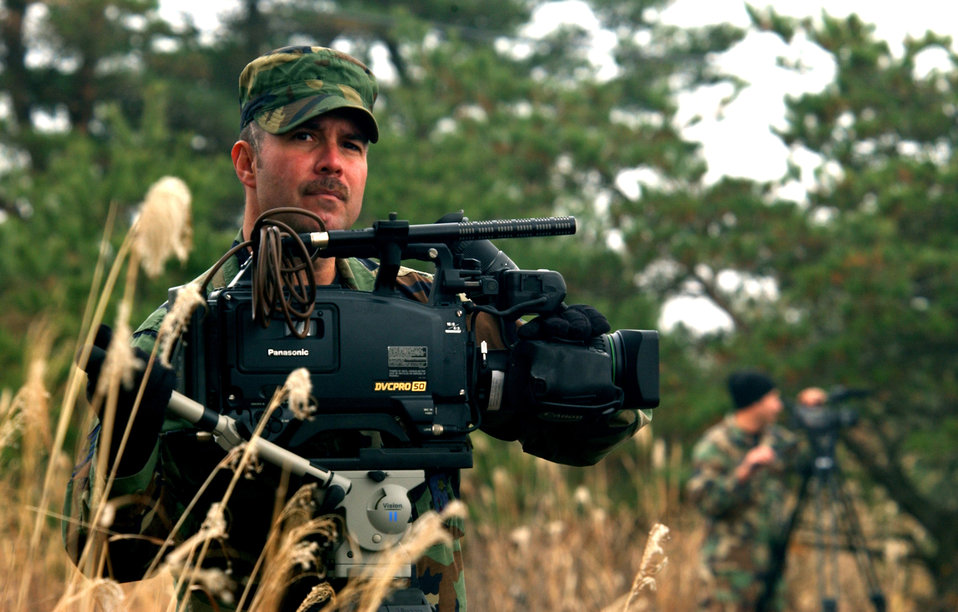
Caught on film

NEAR CAMP IWATA, Japan -- Tech. Sgt. Chris Scrivener prepares to document a tactical insertion of U.S. Army infantrymen as part of Operation Orient Shield here recently. Operation Orient Shield is a bilateral training exercise with the Japan Ground Self Defense Force. Sergeant Scrivener is a videographer assigned to the 1st Combat Camera Squadron at Charleston Air Force Base, S.C.